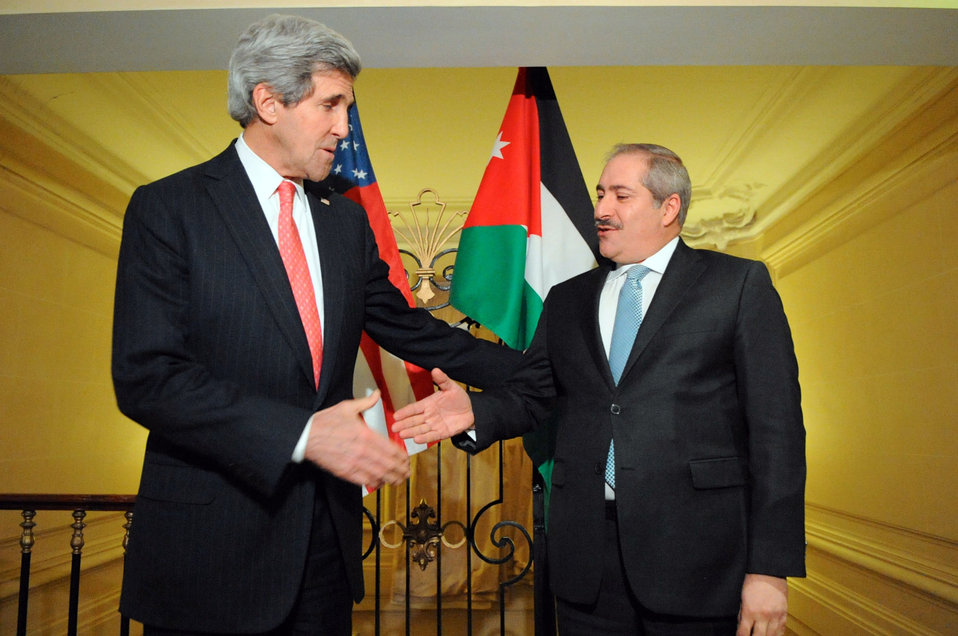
Secretary Kerry, Jordanian Foreign Minister Judeh Shake Hands After Addressing Reporters in Paris

U.S. Secretary of State John Kerry and Jordanian Foreign Minister Nasser Judeh shake hands after speaking to reporters about their upcoming discussion of Syria during a bilateral meeting in Paris, France, on February 19, 2014.